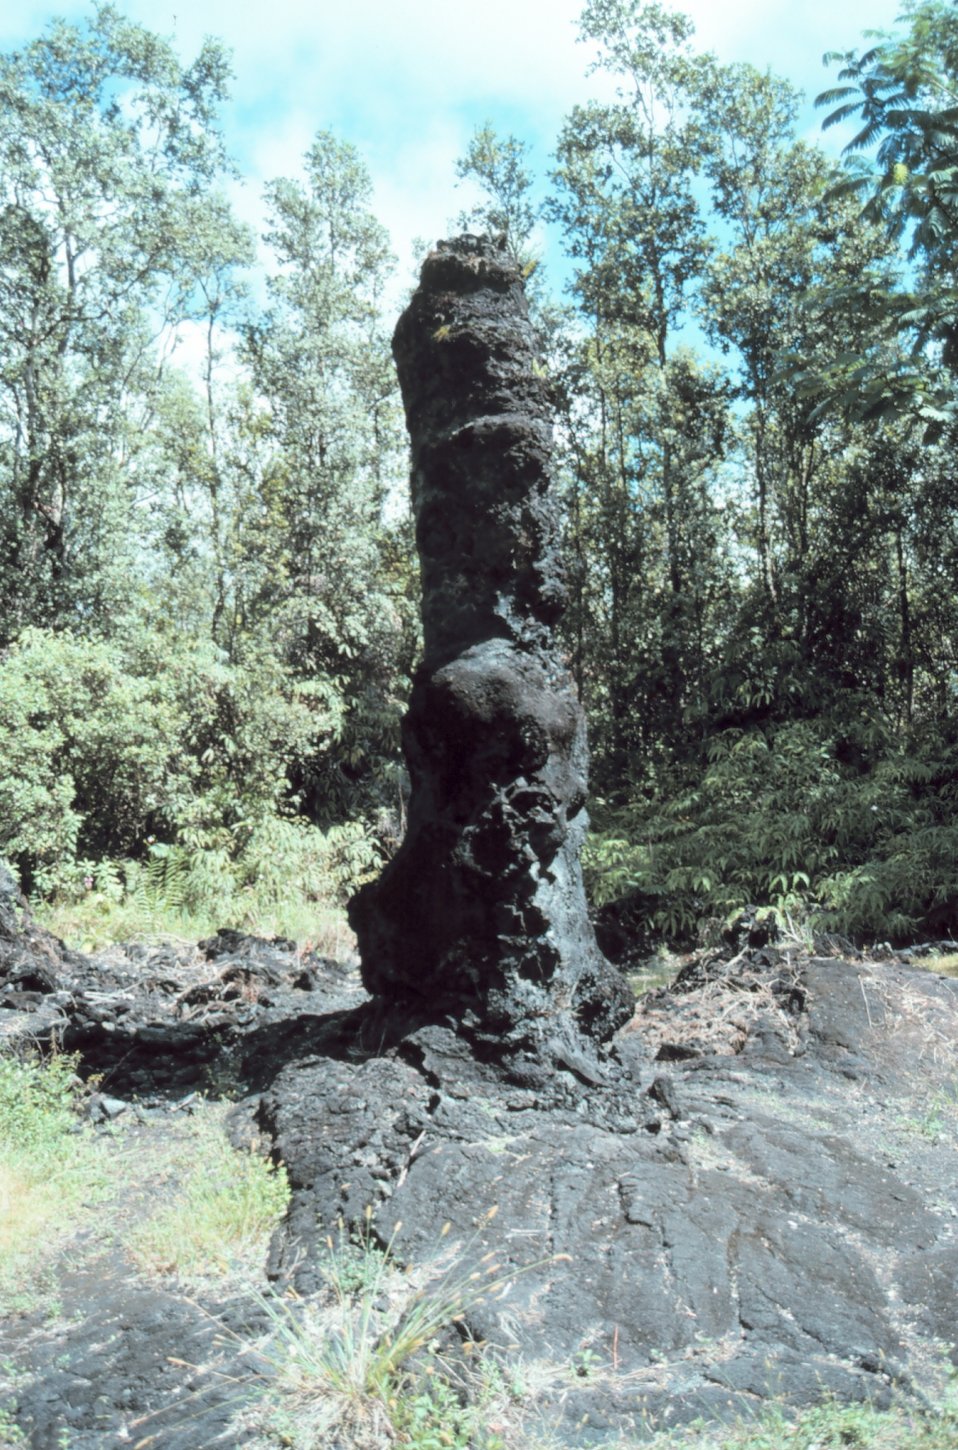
A 'lava tree' formed by lava cooling around the tree trunk - some like this one